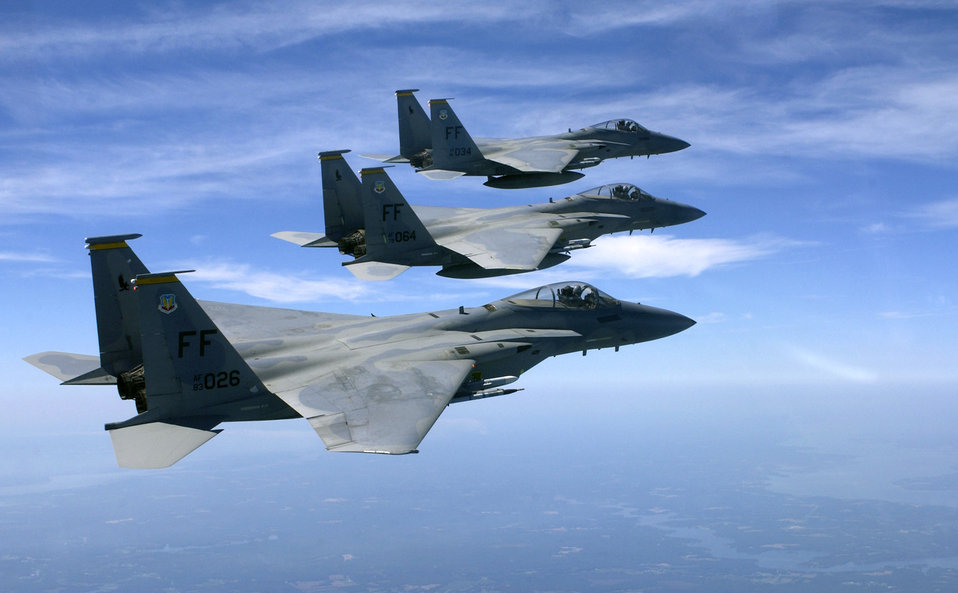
Eagles fly the nest

OVER THE ATLANTIC OCEAN -- Maj. Peter Milohnic, Capt. Jonathan Gration and Lt. Col. John Saghere fly their F-15 Eagle during their final training mission in the 27th Fighter Squadron. After Oct. 1, the unit will officially begin the migration to become the first operational F/A-22 Raptor squadron by mid-2005.